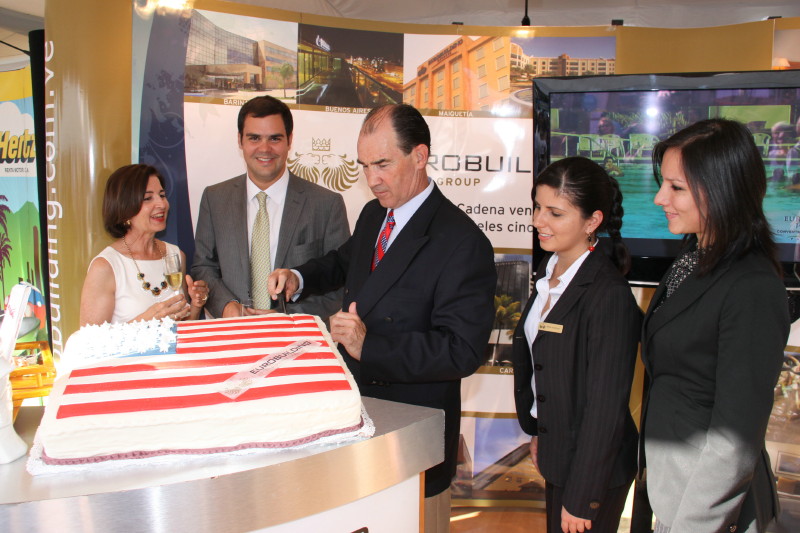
Ambassador Duddy Cuts the American Cake

U.S. Ambassador to Venezuela Patrick D. Duddy cuts the American cake at the booth of one of the vendors who supported the U.S. Embassy Caracas in Venezuela's U.S. Independence Day celebration on June 30, 2010.